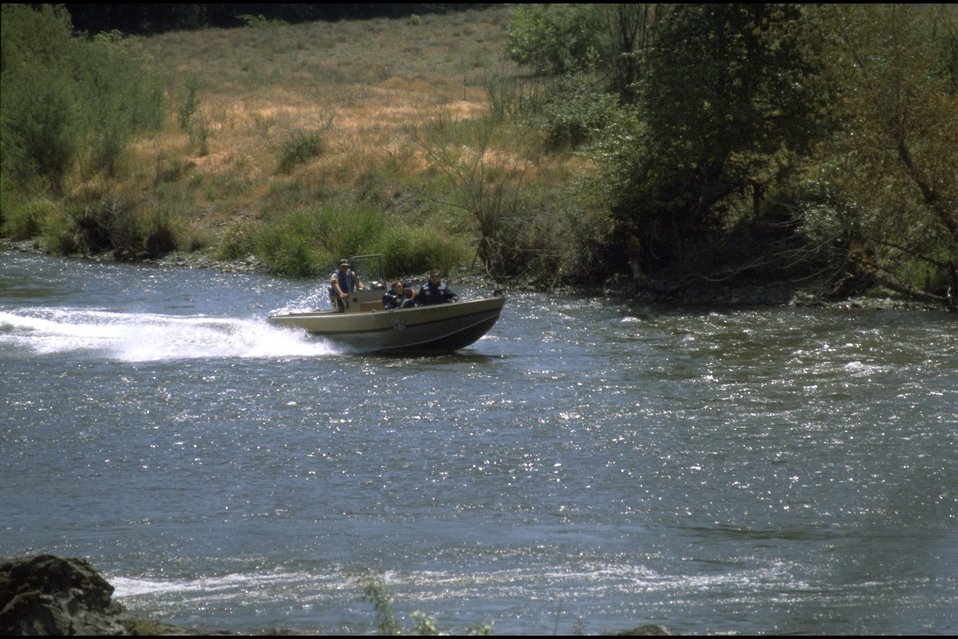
Rogue River - Sheriff's Jet boat.